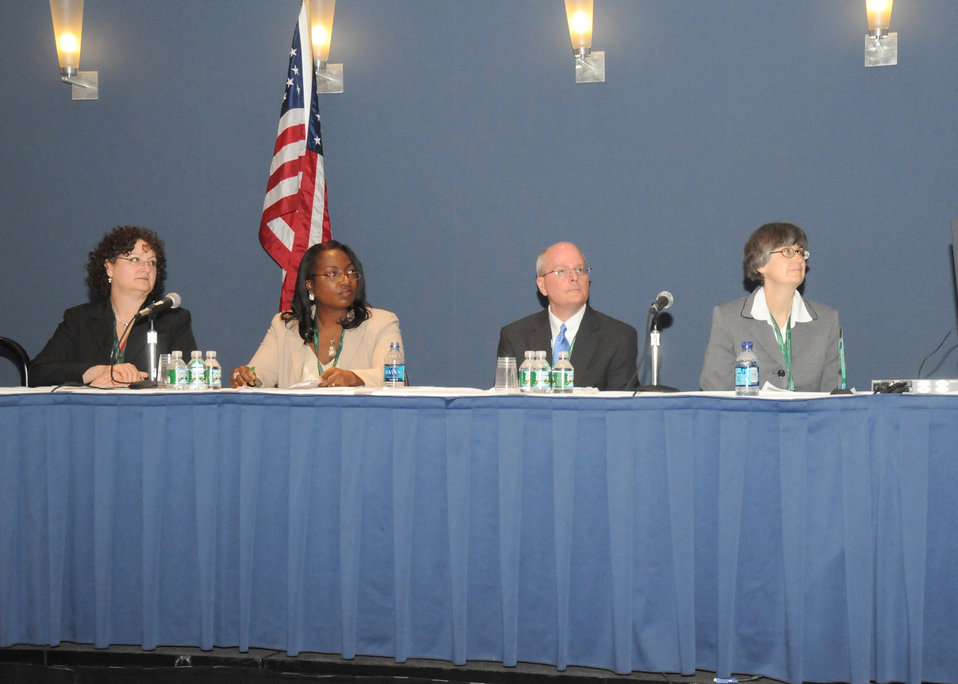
Unliquidated Obligations panel discusses policy and financial practices at the Financial Management Training conference held in Washington, D.C. on Thursday, May 27, 2010. (L to R Risk Management Agency Chief Financial Officer Margo Erny, Agriculture Office of the Chief Financial Officer Director of Internal Controls Annie Walter-Bradley, Agriculture Office of the Chief Financial Officer Director of Accounting Policy Kevin Close, and Office of Inspector General Director Financial Audit Operations Lynette Cockrell) USDA photo 10di1373-125.